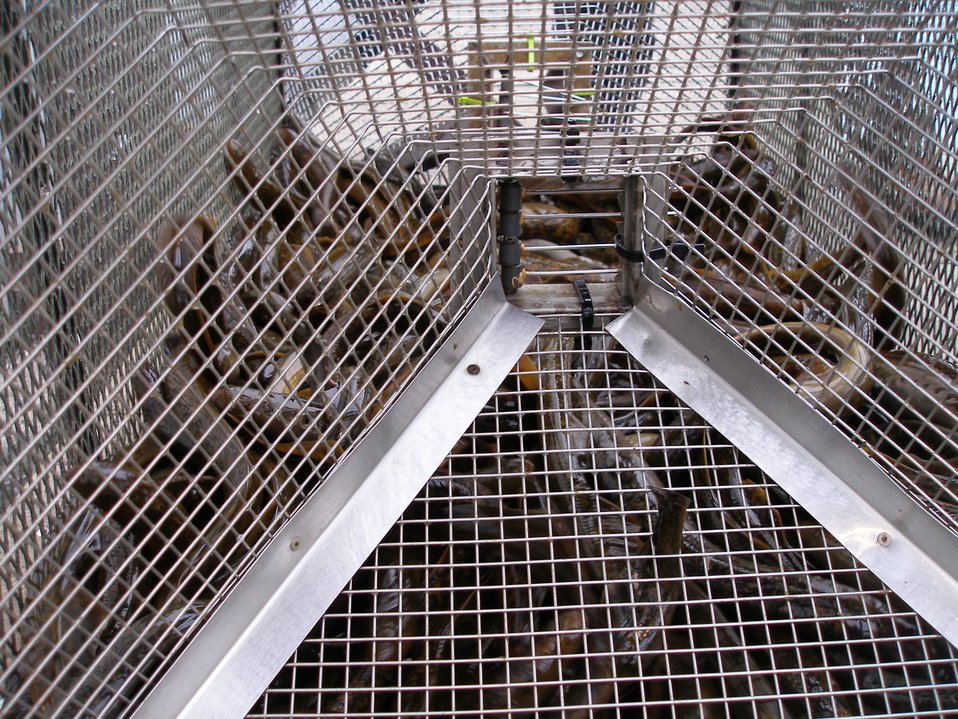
Sea Lamprey Portable Assessment Trap Funnel Entrance.